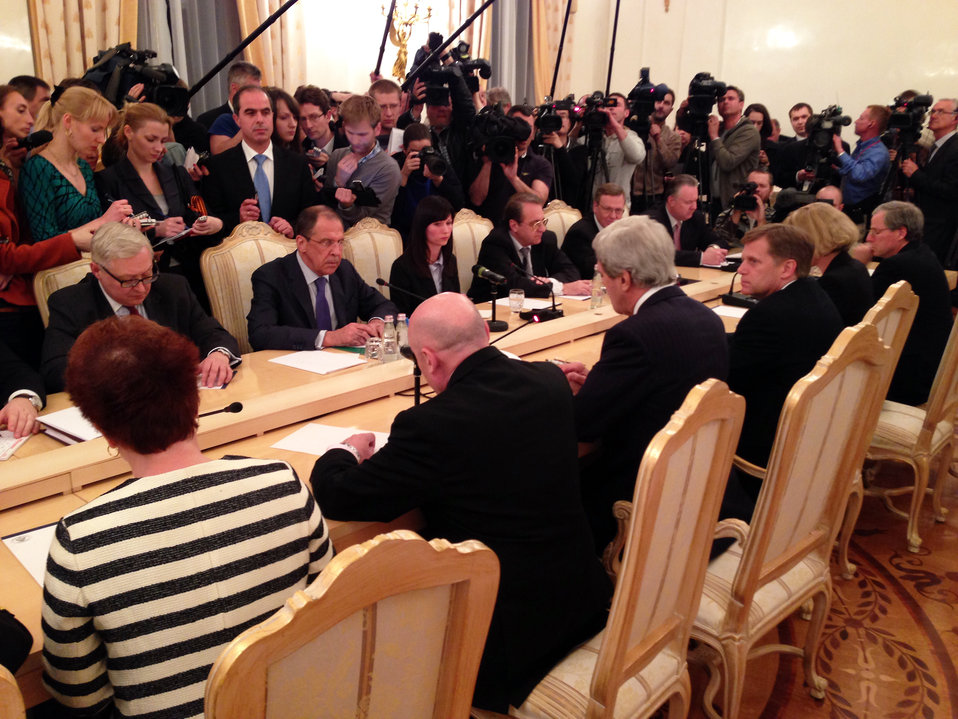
Secretary Kerry Meets With Russian Foreign Minister Lavrov

U.S. Secretary of State John Kerry, accompanied by U.S. Ambassador to Russia Michael McFaul, meets with Russian Foreign Minister Sergey Lavrov at the Russian Ministry of Foreign Affairs' Guesthouse Osobnyak in Moscow, Russia, on May 7, 2013.